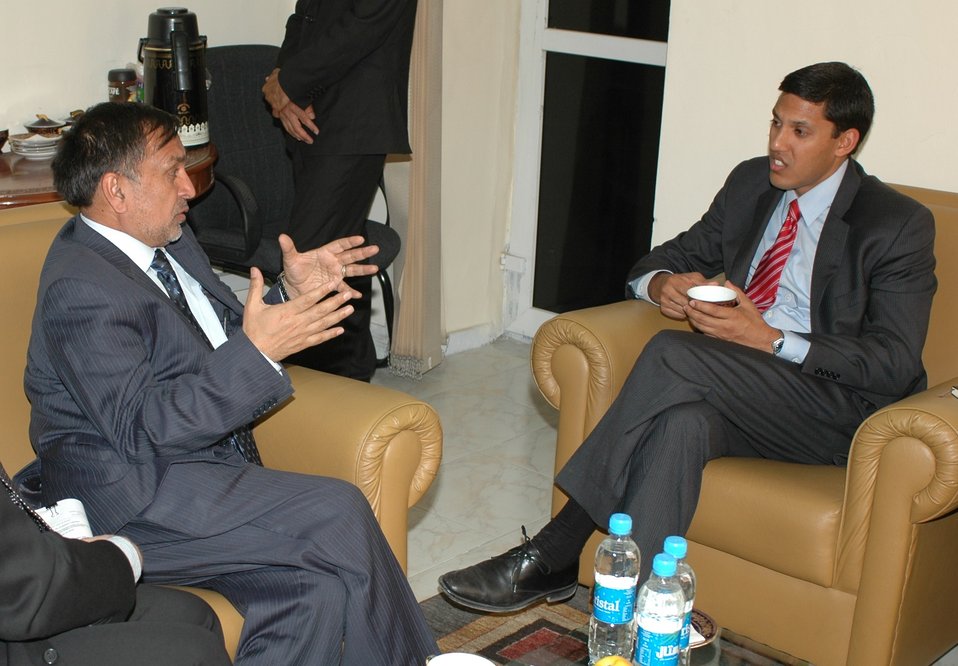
DDP MOU Preparation